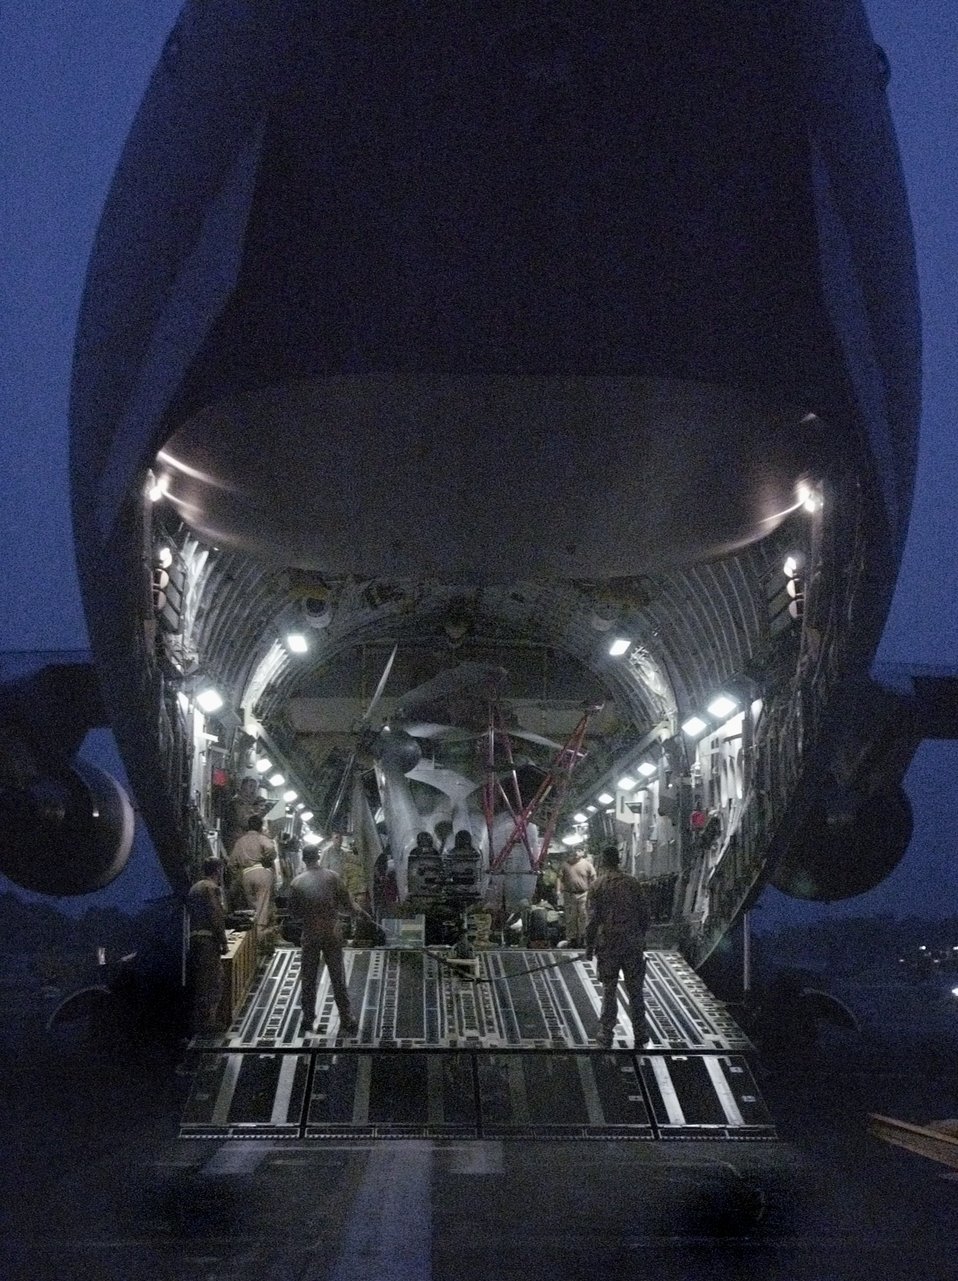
Big load

CHAKLALA AIR BASE, Pakistan -- Sailors offload a Navy MH-60 Knight Hawk helicopter from a C-17 Globemaster III here Oct. 17. Air Force cargo airplanes have been delivering all sorts of relief supplies here as part of the worldwide relief effort to aid victims of the Oct. 8 earthquake.